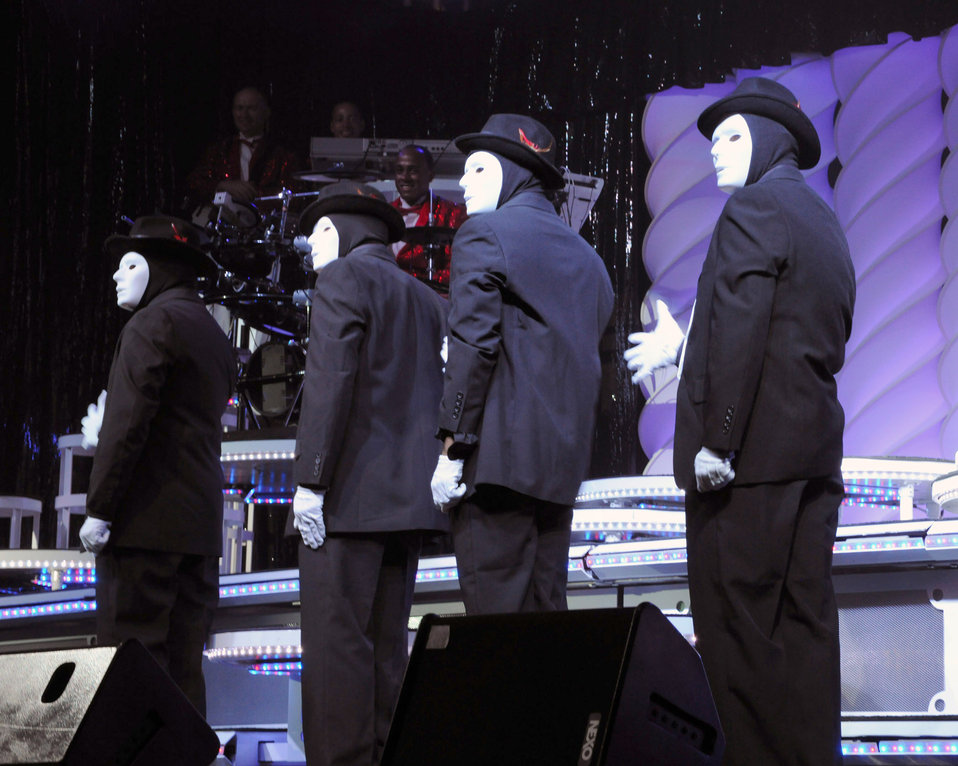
'Tops in Blue' perform overseas

Tops In Blue performs to Airmen and their families June 22, 2010, at Royal Air Force Croughton, England. The group serves as an expeditionary entertainment unit to provide quality entertainment from within Air Force resources for the Air Force family.